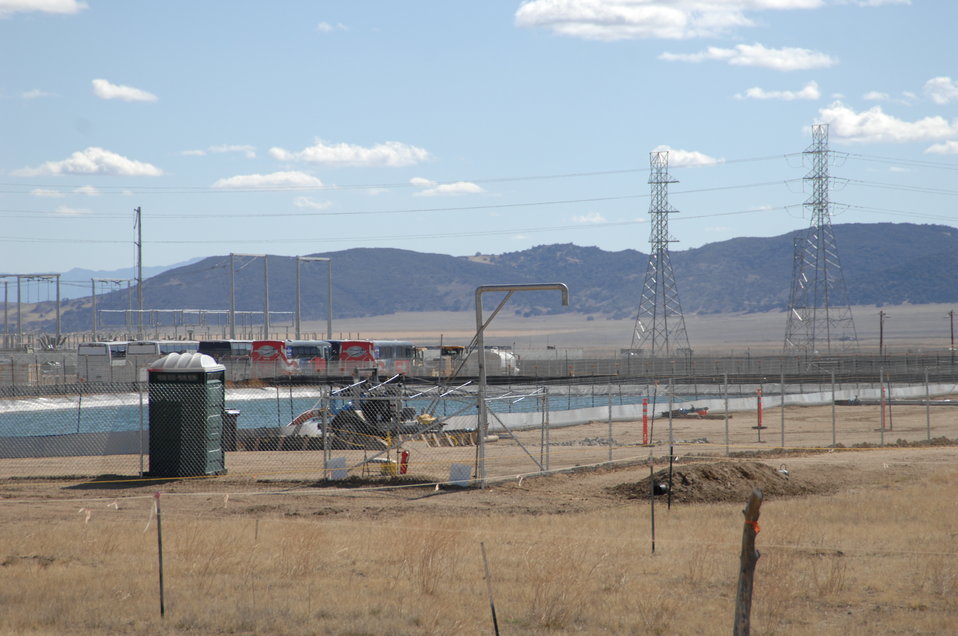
Evaporation Pond at Topaz Solar